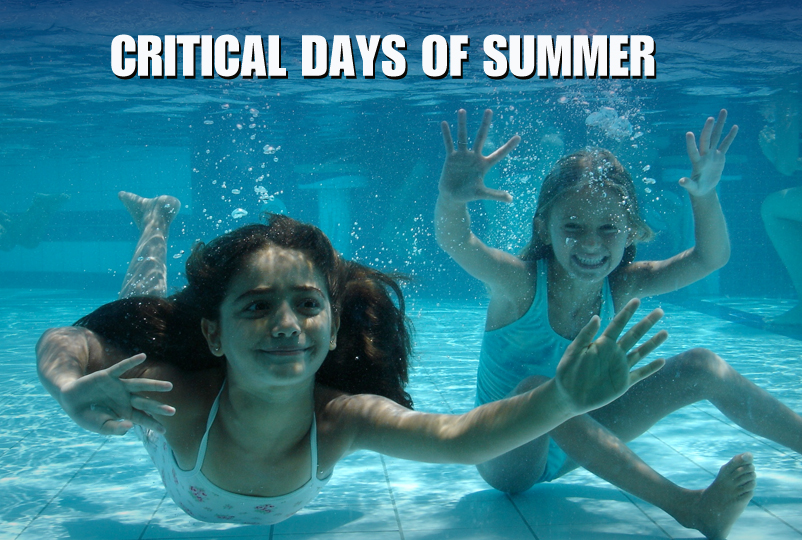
Critical Days of Summer